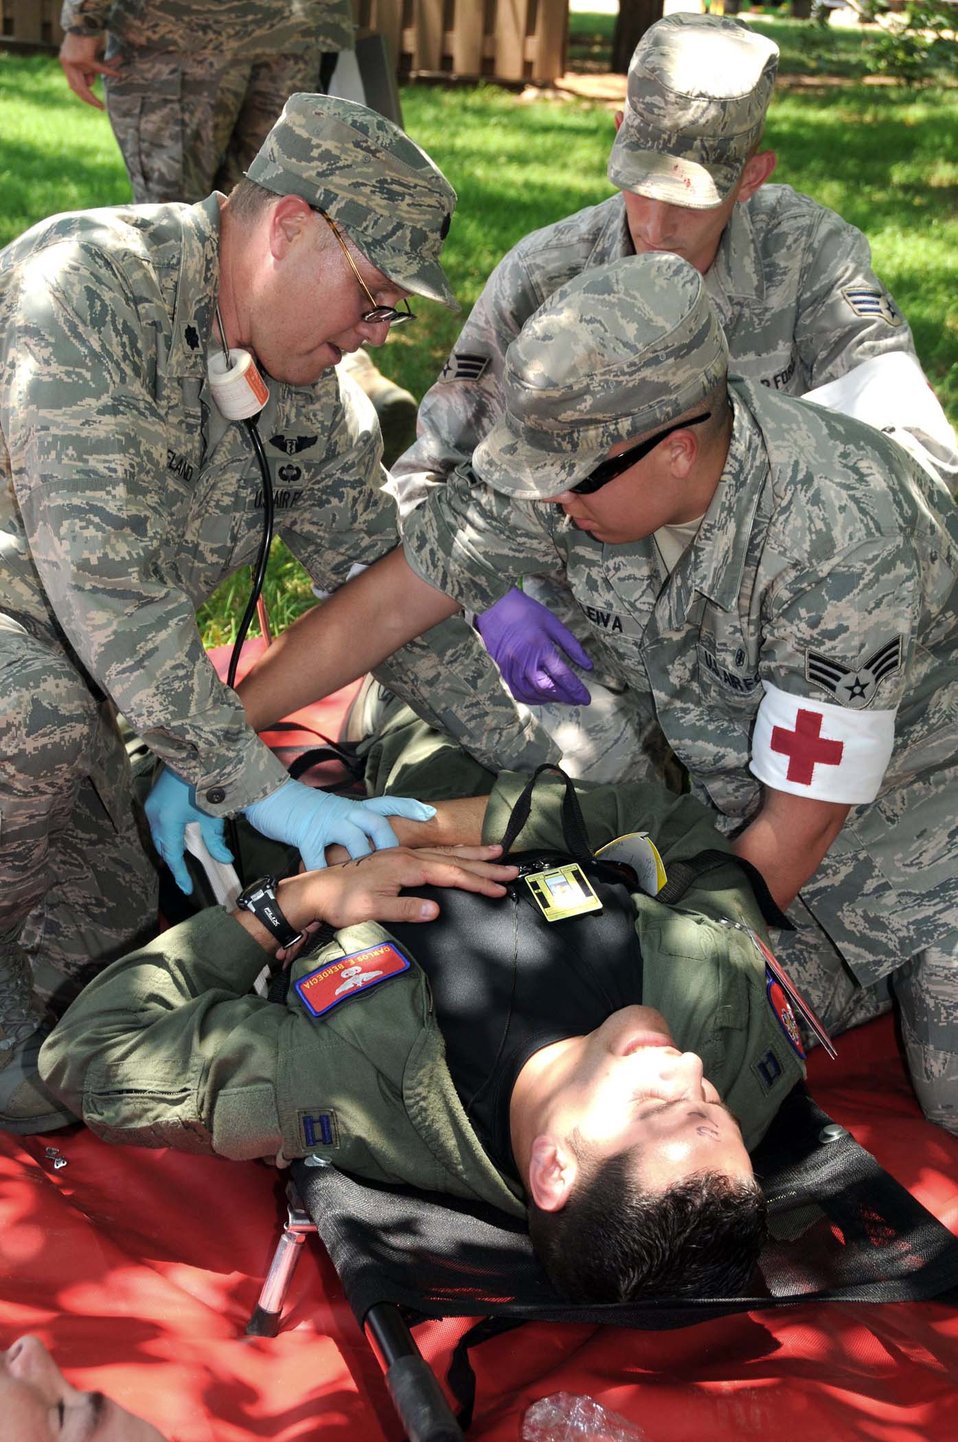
Altus Airmen exercise mass casualty response and recovery

Airmen from the 97th Medical Group provide medical assistance to a role player during the force protection exercise June 1, 2010, at Altus Air Force Base, Okla. More than 65 role players from around the base volunteered to help make the exercise as realistic as possible.